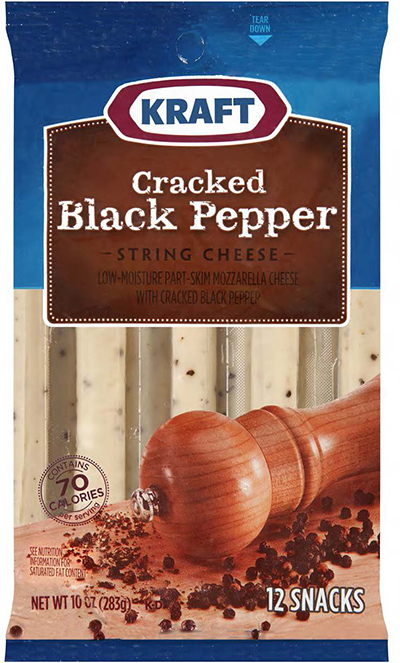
RECALLED – Cheese

October 25, 2013 – Product Recall – Kraft Voluntarily Recalls Some Varieties of Kraft And Polly-O String Cheese And String Cheese Twists Due to Premature Spoilage.